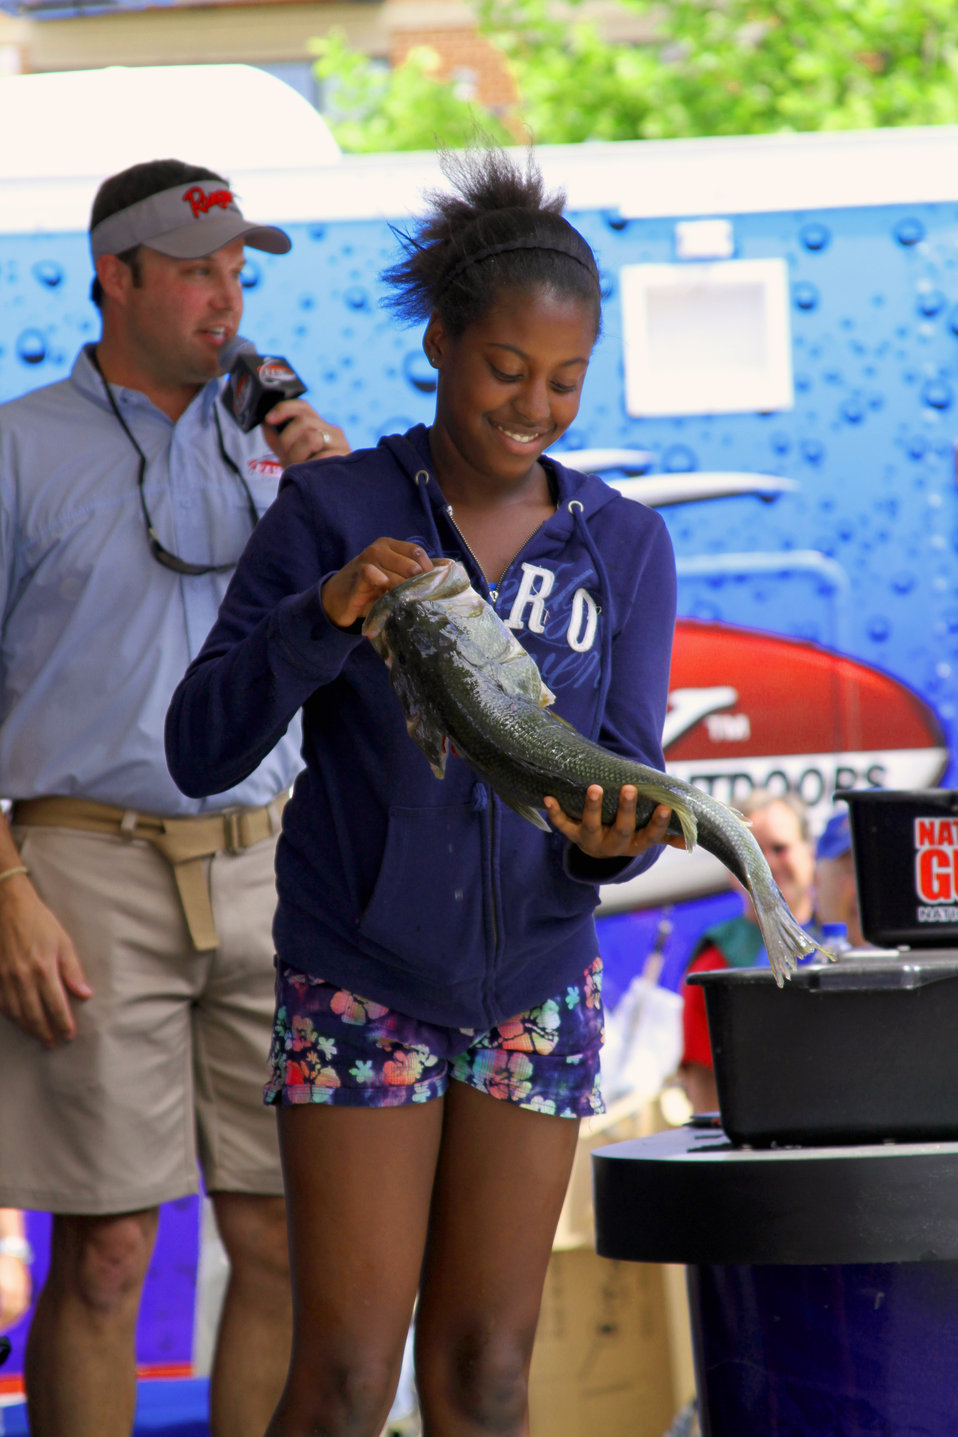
The winner of the morning's fishing contest at the National Harbor in Washington D.C. A 6 pound Bass!